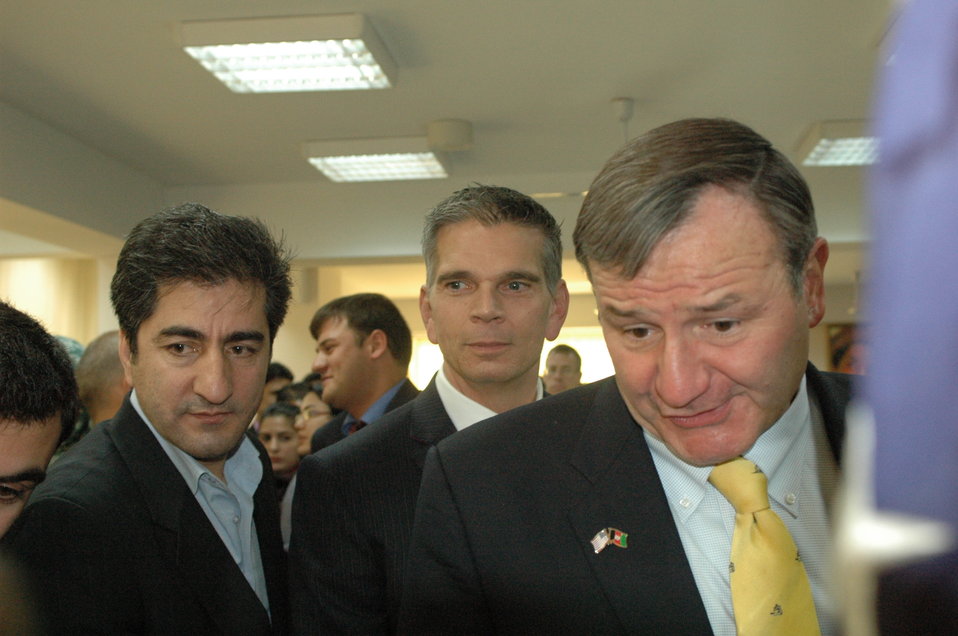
Community Based Stabilization Grants Ceremony, December 7, 2010